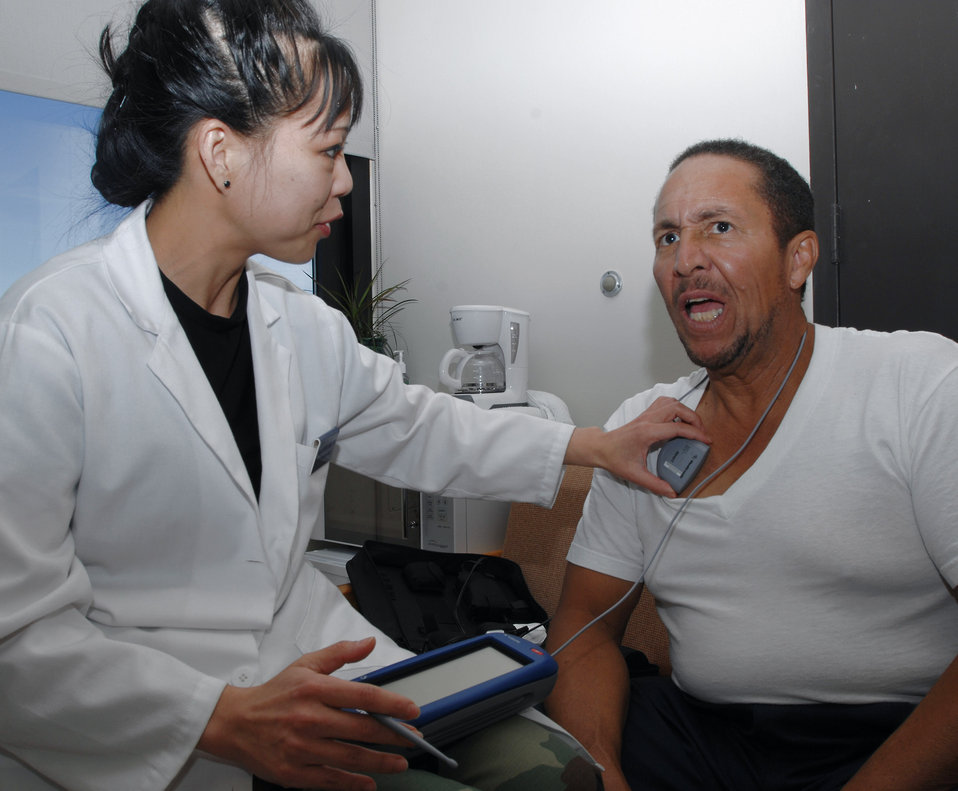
Brain stimulator helps Parkinson's patient

Neurologist Maj. (Dr.) Maria Alvarez adjusts the settings on retired Tech. Sgt. Jewel Yarber's neurostimulator at San Antonio Military Medical Center-South, or Wilford Hall Medical Center Dec. 2 at Lackland Air Force Base, Texas. Sergeant Yarber received a brain stimulator earlier this year which sends electrical impulses to specific parts of his brain to reduce Parkinson's disease symptoms.